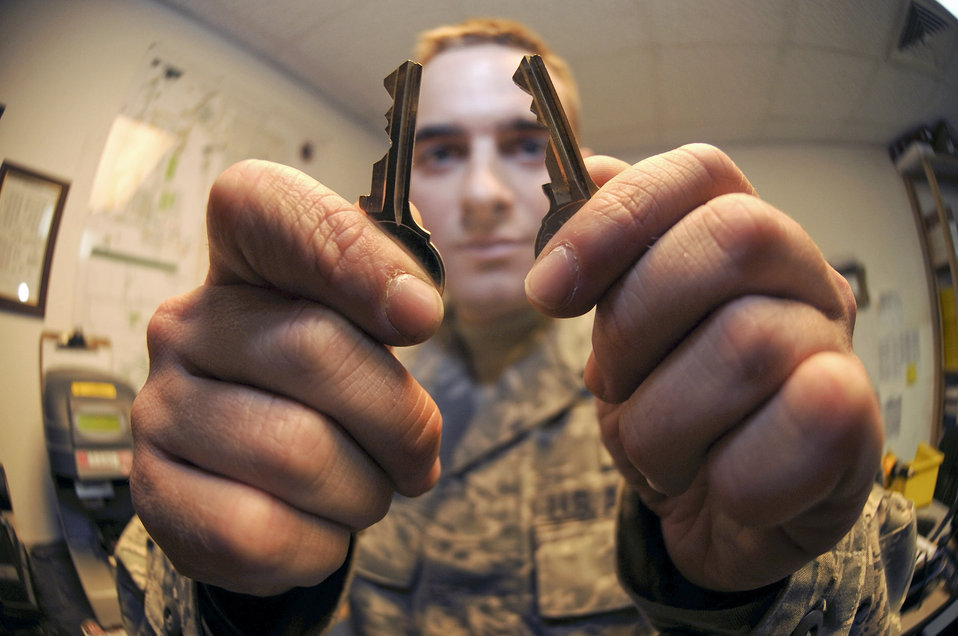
The key masters

Senior Airman Jesse Testudine checks for any discrepancies on a newly made key by comparing it to the original Feb. 25 at an air base in Southwest Asia. Airman Testudine and fellow locksmiths make an estimated 430 keys a month for new personnel, new building structures and to replace lost keys. Airman Testudine is a locksmith with the 379th Expeditionary Civil Engineer Squadron and is deployed from Misawa Air Base, Japan. He is a native of Baltimore.